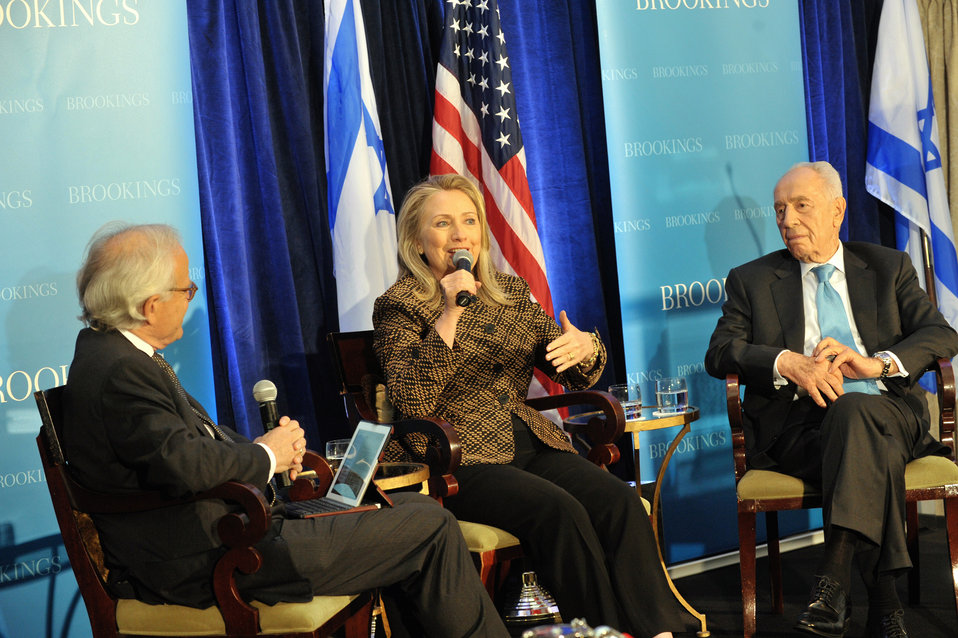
Secretary Clinton Participates in a Joint Discussion With Israeli President Peres

U.S. Secretary of State Hillary Rodham Clinton participates in a joint discussion with Israeli President Shimon Peres hosted by The Brookings Institution in Washington, D.C. on June 12, 2012.